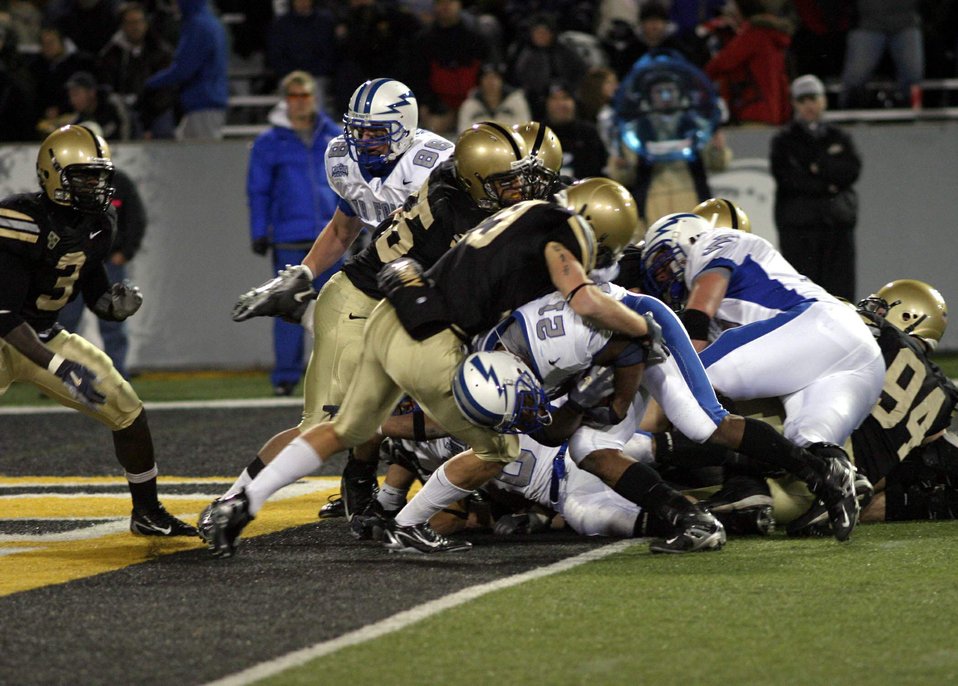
Army/Air Force football game

Air Force fullback Ryan Williams bulls his way into the end zone Nov. 3 at West Point, N.Y. The Falcons scored three rushing touchdowns in their 43-7 victory.